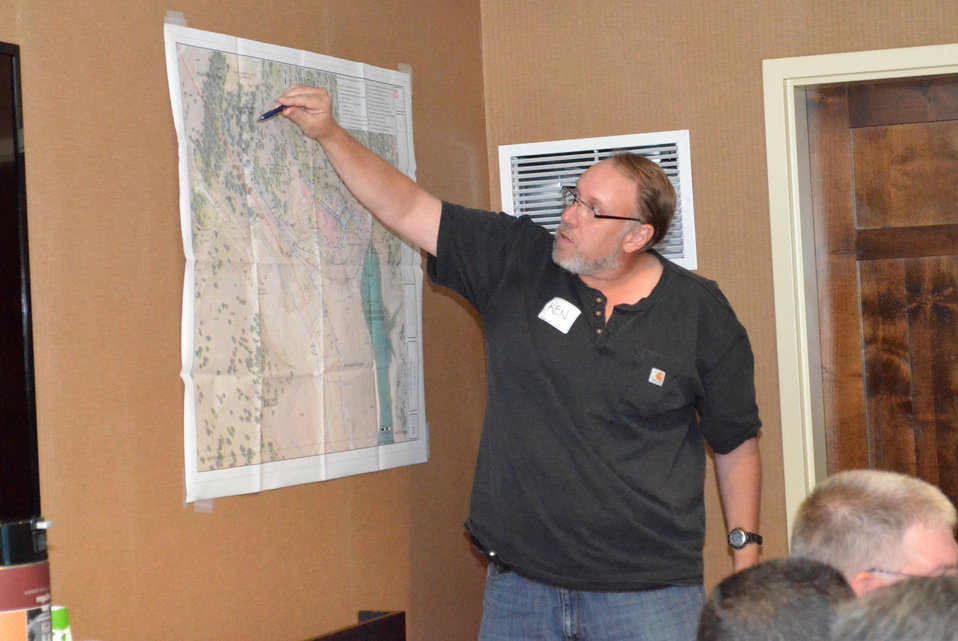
Corps conducts emergency response exercise at Martis Creek Dam

Ken Pattermann, geotechnical engineer for the U.S. Army Corps of Engineers Sacramento District, points out potential impacts an emergency situation at Martis Creek Dam could have on the facility during an emergency response exercise Sept. 19, 2013, in Truckee, Calif. The exercise provided participants an opportunity to evaluate and improve emergency response plans associated with the dam. Each year, the Corps deploys hundreds of employees to respond to disasters around the world; sustaining lives with critical commodities; providing technical expertise; and assessing and restoring critical infrastructure.